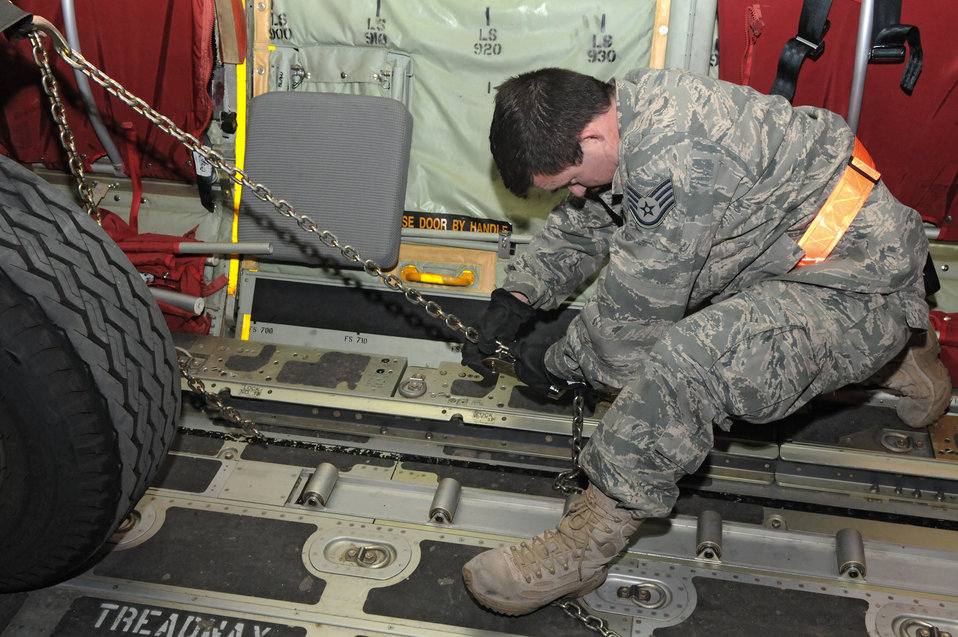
Operation Odyssey Dawn

SPANGDAHLEM AIR BASE, Germany ? A staff sergeant from the 52nd Logistics Readiness Squadron secures cargo inside a C-130J Super Hercules here in support of Operation Odyssey Dawn March 21. Joint Task Force Odyssey Dawn is the U.S. Africa Command task force established to provide operational and tactical command and control of U.S. military forces supporting the international response to the unrest in Libya and enforcement of United Nations Security Council Resolution (UNSCR) 1973. UNSCR 1973 authorizes all necessary measures to protect civilians in Libya under threat of attack by Qadhafi regime forces. JTF Odyssey Dawn is commanded by U.S. Navy Admiral Samuel J. Locklear, III.